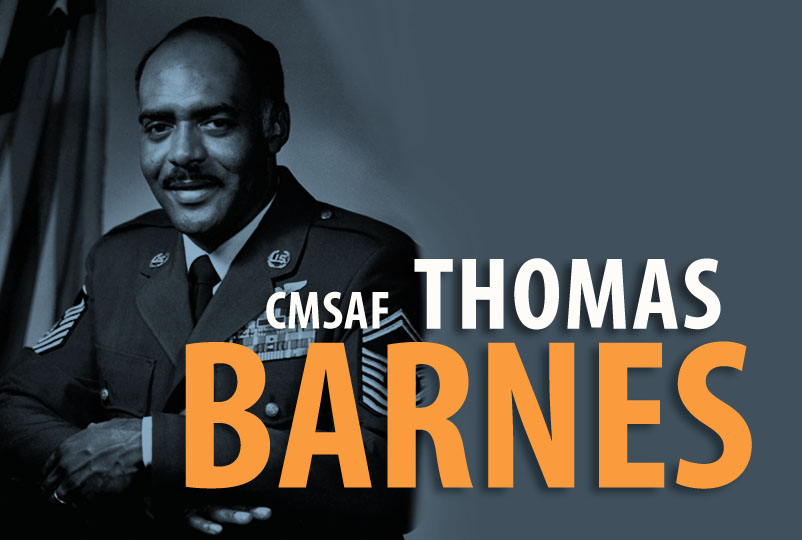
CMSAF Thomas Barnes